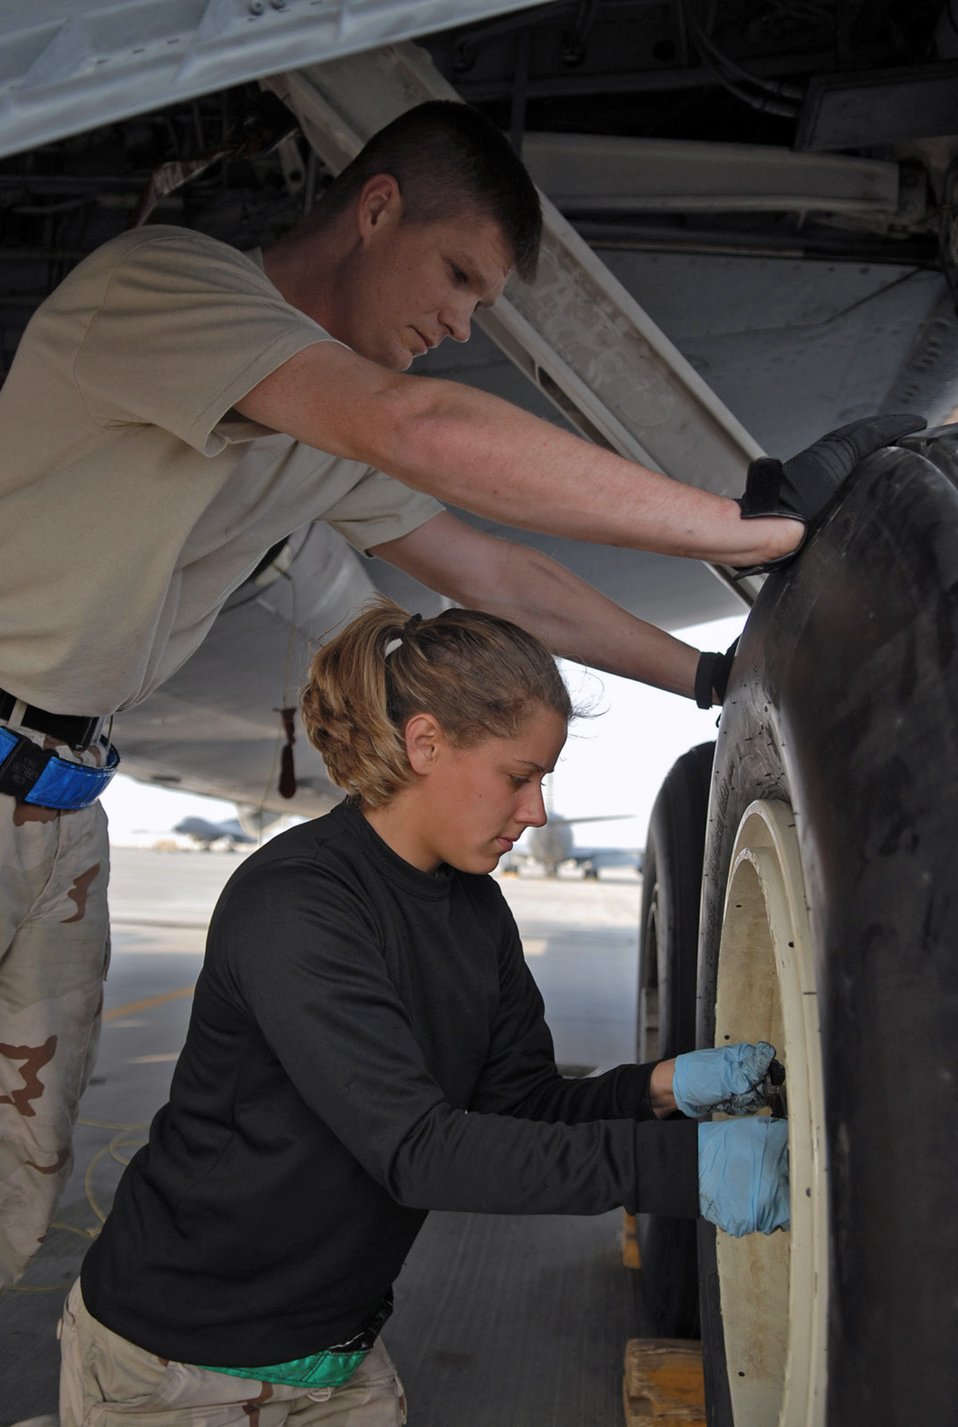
Tired

Staff Sgt. Frank Veres holds a new wheel in place while Airman 1st Class Abigail Smith replaces the lug bolts for a KC-135 Stratotanker Jan. 5 at a Southwest Asia air base. They are assigned to the 379th Expeditionary Aircraft Maintenance Squadron. Sergeant Veres is a crew chief deployed from Fairchild Air Force Base, Wash., and Airman Smith is a crew chief deployed from McConnell AFB, Kan.